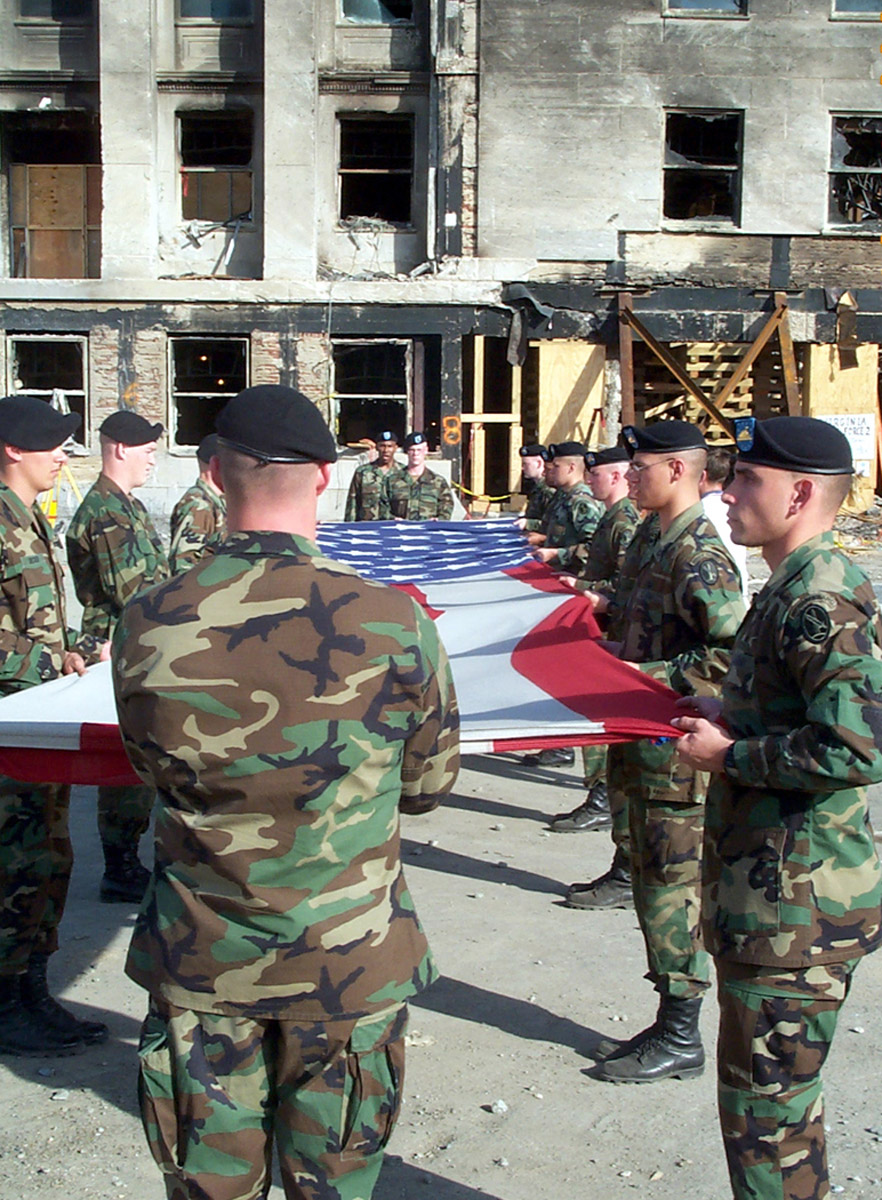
WASHINGTON -- Soldiers from A Company, 3rd Infantry,